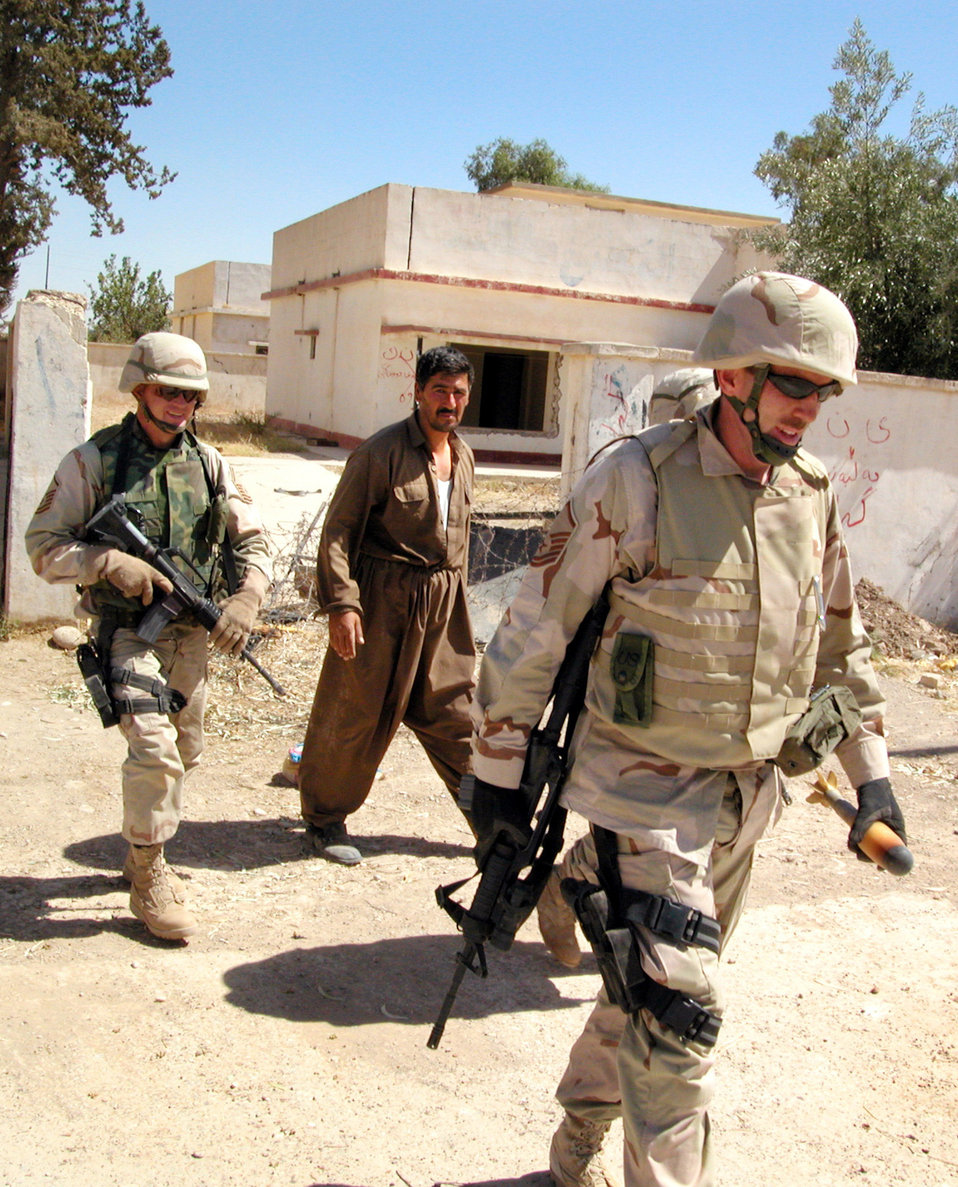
Airmen clean up Iraqi stockpile

KIRKUK, Iraq -- Master Sgts. Dale Griffin (right) and Jerry Dunn remove an Iraqi training mortar from a neighborhood near a former Republican Guard facility here. Griffin and Dunn are explosive ordnance technicians deployed to nearby Kirkuk Air Base.